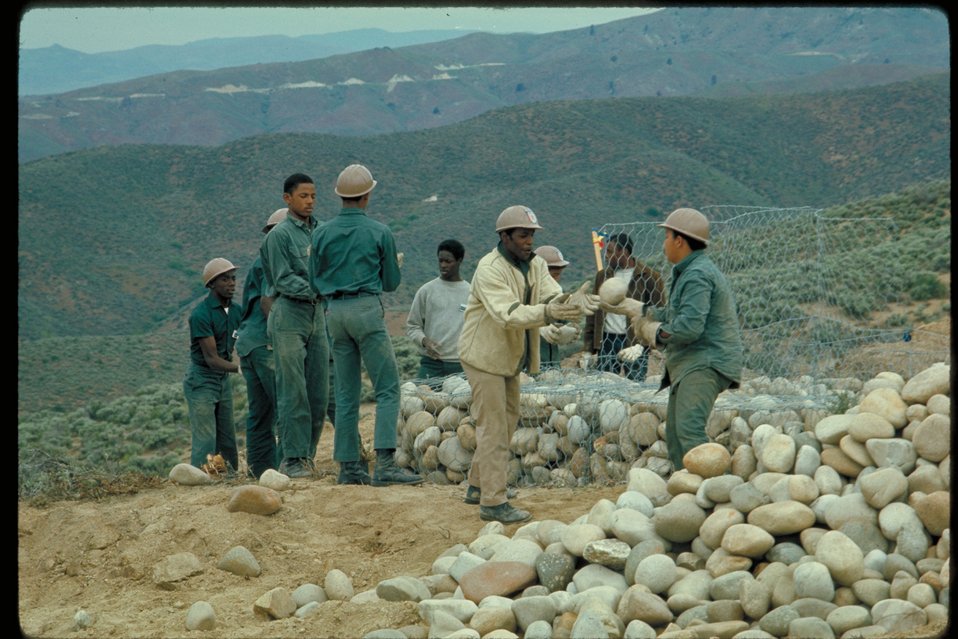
Gabion Construction 8th St Road Boise Front Four Rivers Field Office LSRD Lower Snake River District